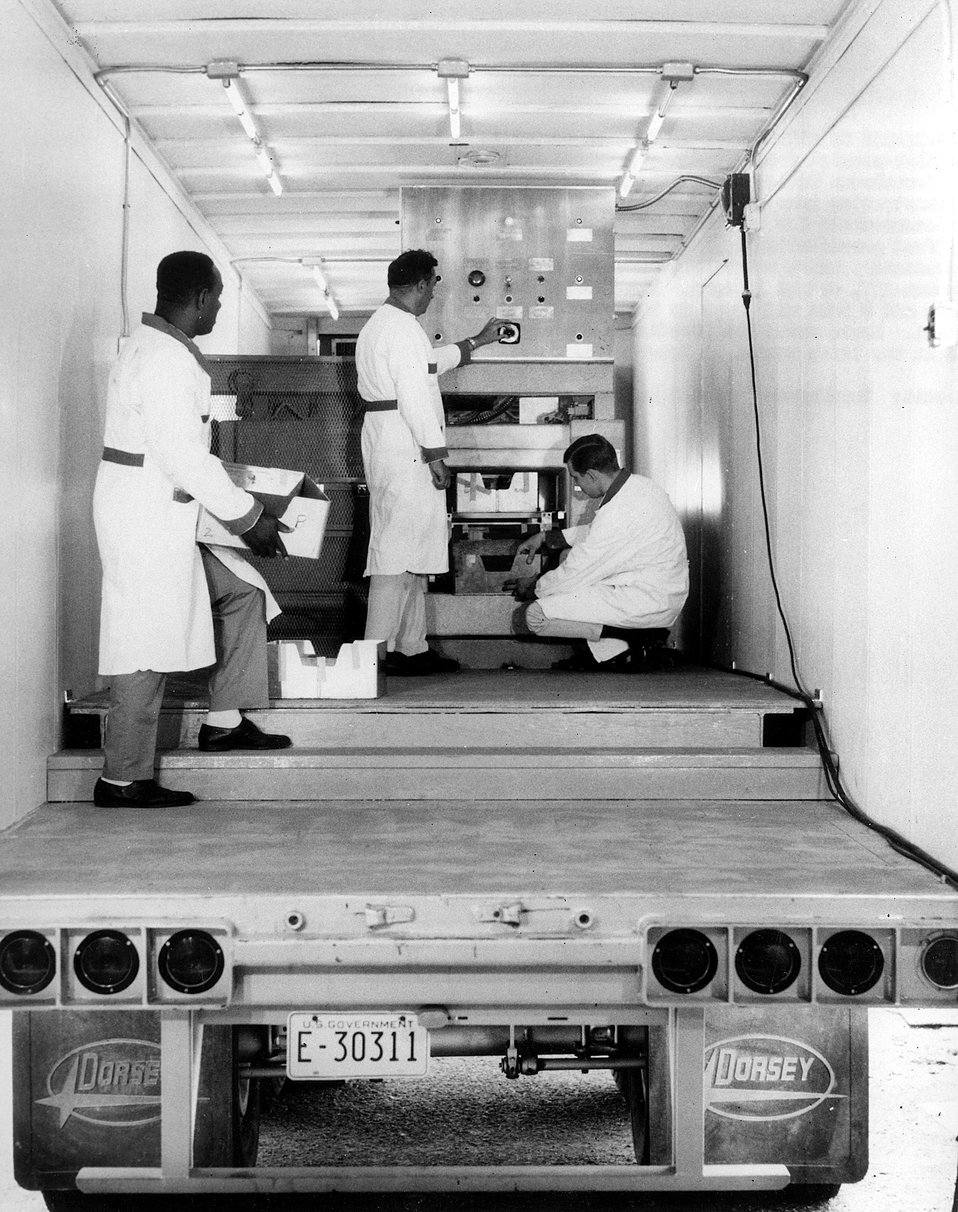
A portable, trailer-mounted food irradiation, loaded and tested at Brookhaven National Laboratory, began a 2-year demonstration tour of the Nation during mid-1967. c. 1968